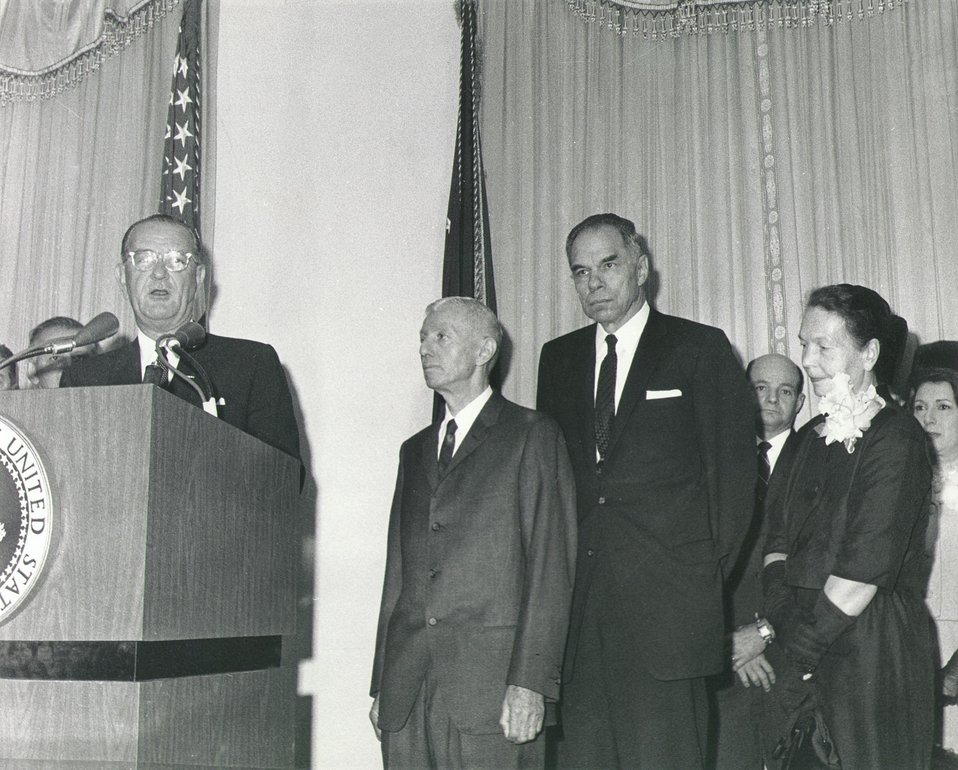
Fermi Award for Rickover in 1964.